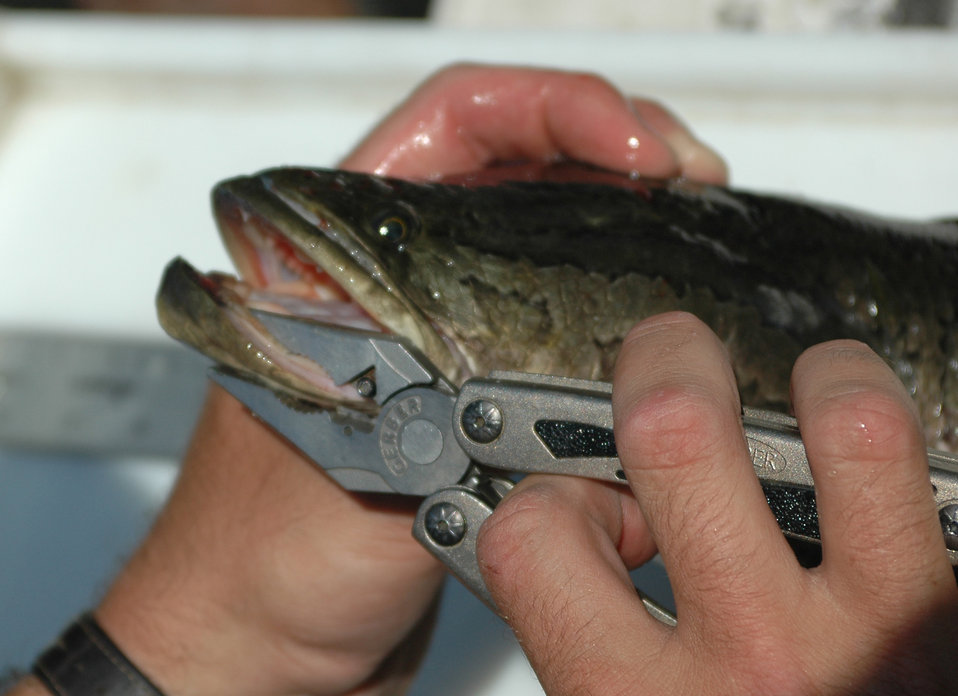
northern snakehead

The U.S. Fish and Wildlife Service listed the Northern Snakehead as an injurious species in 2002.